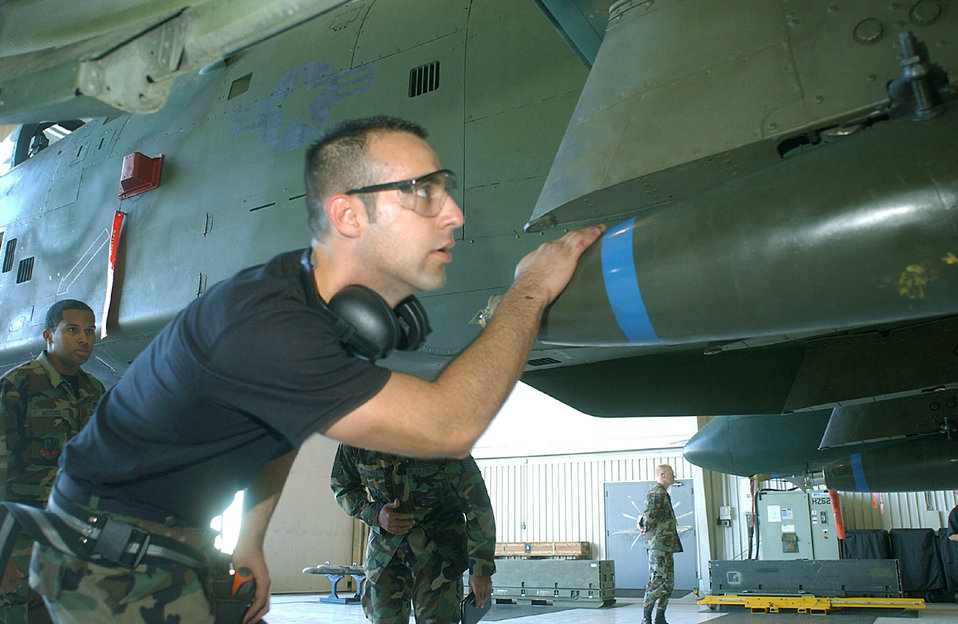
Load lovers

DAVIS-MONTHAN AIR FORCE BASE, Ariz. -- Senior Airman Ulyses Ojeda checks to ensure a bomb is loaded correctly onto an A-10 Thunderbolt II during a weapons load crew competition here. Airman Ojeda is assigned to the 355th Aircraft Maintenance Squadron here.